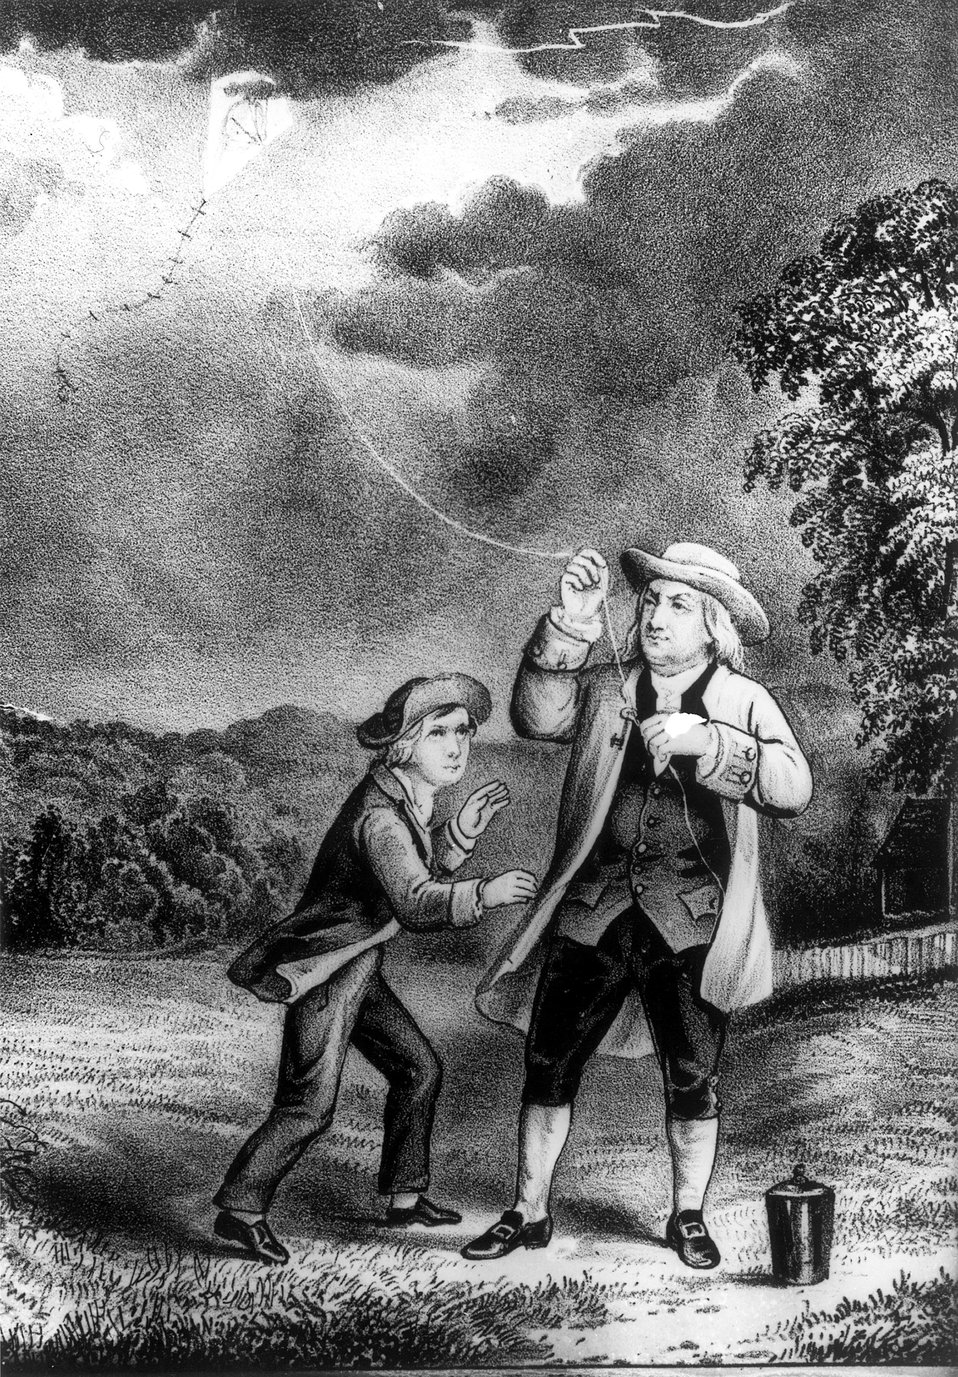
Franklin with kite.